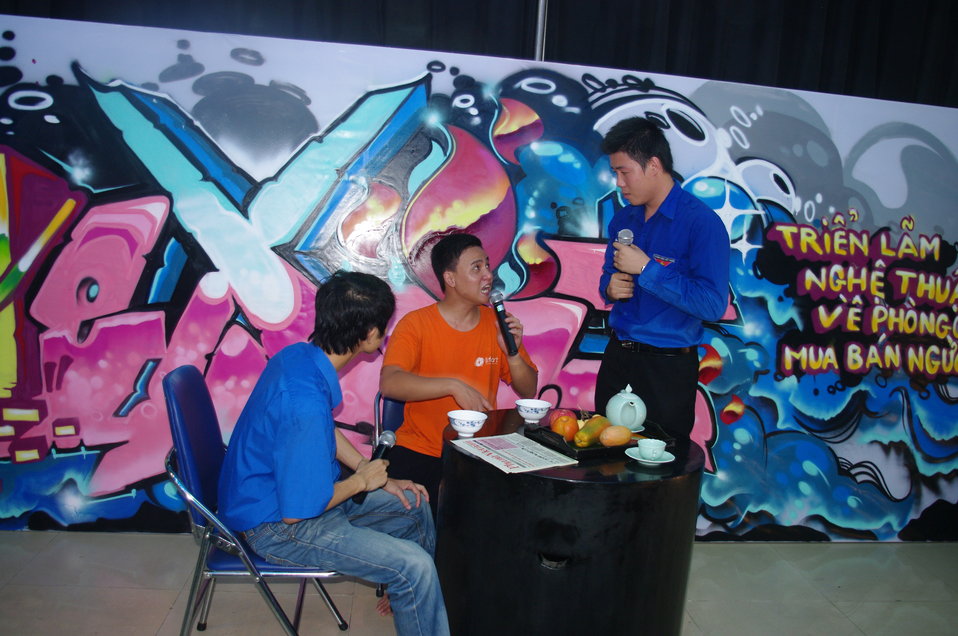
MTV EXIT opens Youth Forum in Hanoi